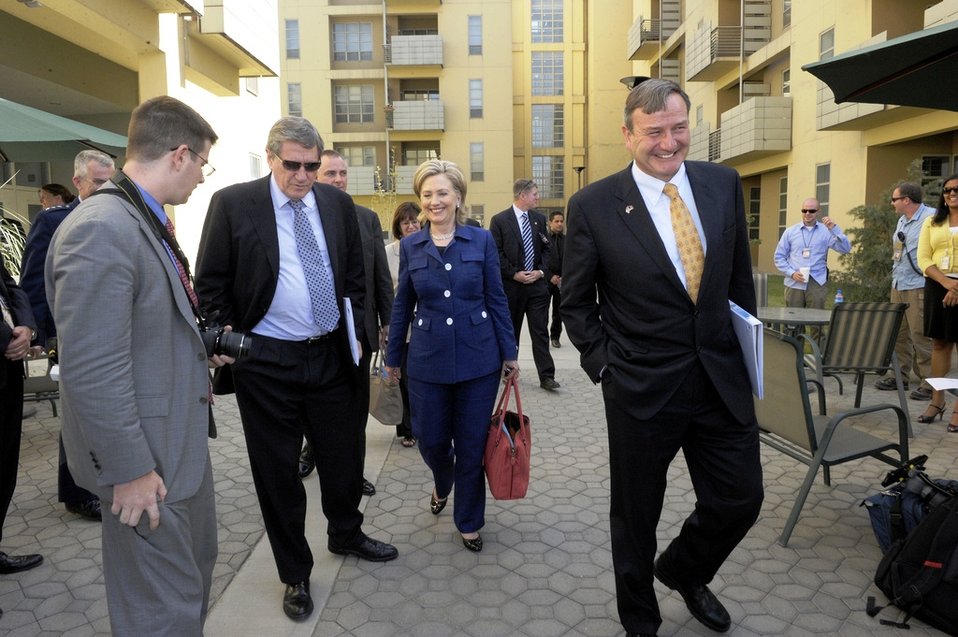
Special Representative Holbrooke, Secretary Clinton, and Ambassador Eikenberry Walk in Kabul

U.S. Special Representative for Afghanistan and Pakistan Richard C. Holbrooke, U.S. Secretary of State Hillary Rodham Clinton, and U.S. Ambassador to Afghanistan Karl Eikenberry walk in Kabul, Afghanistan, on July 20, 2010.